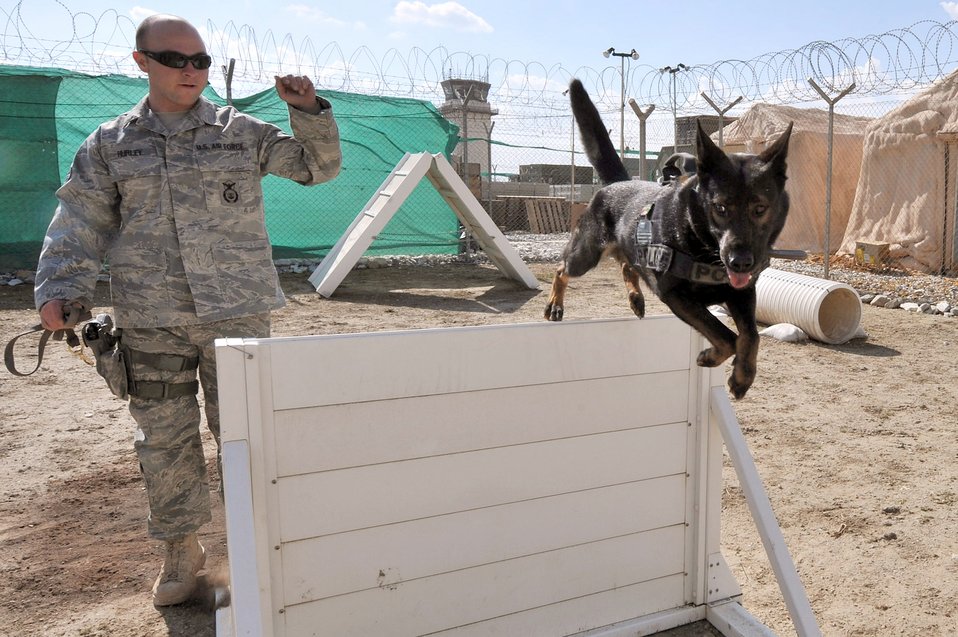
I believe I can fly

Staff Sgt. Brett Hurley commands Rex, his military working dog, to jump over a hurdle Feb. 25, 2011, at the obstacle course at Bagram Airfield, Afghanistan. Sergeant Hurley and Rex are assigned to the 455th Expeditionary Security Forces Squadron.